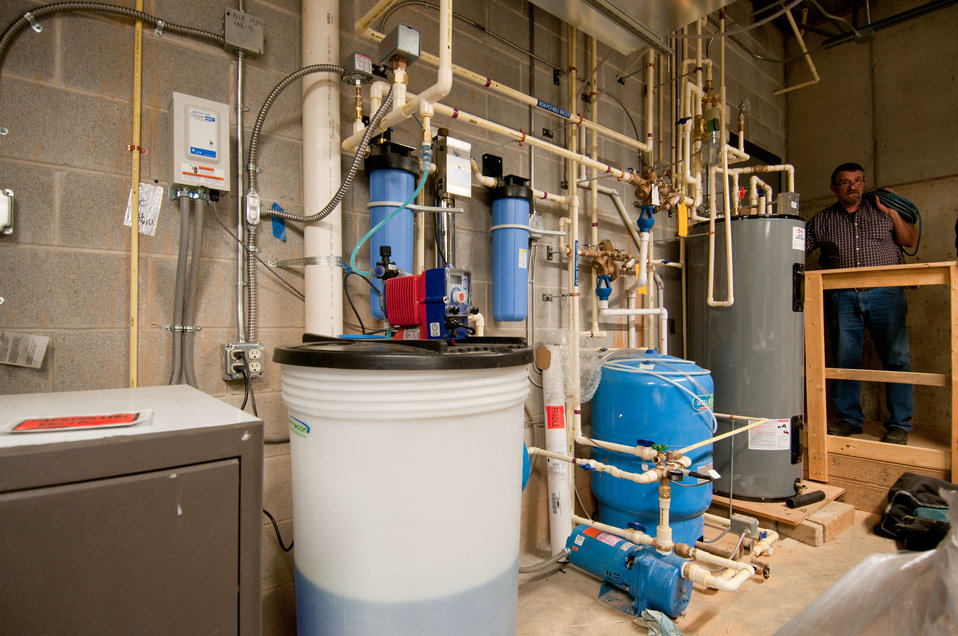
Water treatment system at Cooper Vineyards in Louisa, VA, the first winery on the East Coast and the second in the country to be awarded the fourth and highest, Platinum certification by Leadership in Energy and Environmental Design (LEED).
From a Virginia Wine Board Marketing Office press release, “The process of building a LEED platinum certified building was initially more expensive and arduous than co-owners, Jacque Hogge, MD and Geoffrey Cooper, MD expected, but they were able to get financial assistance from the United States Department of Agriculture. “Know that there are grants available to help with the costs of sustainable building projects,” Hogge advises to other potential green wineries. Cooper Vineyards received 2 of the 3 USDA (U.S. Department of Agriculture Rural Development (RD) Rural Energy Financing program) grants awarded in Virginia in 2010 to help with the expenses of their construction.”
Rural Energy Financing program focuses on loan guarantees, loans and grants to agricultural producers, businesses, cooperatives and rural residents for renewable energy systems and to make energy efficiency improvements.
The tasting room and building collects rainwater from the roof; uses low flow water fixtures to reduce usage by 40%; utilizes structurally insulated panels for the roof and walls; heats and cools the entire building using a geothermal system that includes pipes that are embedded in the parking lot; low-voltage LED lighting with daylight and occupancy sensors provide ample light when it is needed; a solar panel array provides more than 15% of the energy needs for the building, and much of the construction materials are from local and recycled material sources. For more information about USDA please go to www.usda.gov, Rural Development and Rural Energy Financing. LEED was developed by the U.S. Green Building Council (USGBC) is a 501 c3 non-profit organization committed to a prosperous and sustainable future for our nation through cost-efficient and energy-saving green buildings.